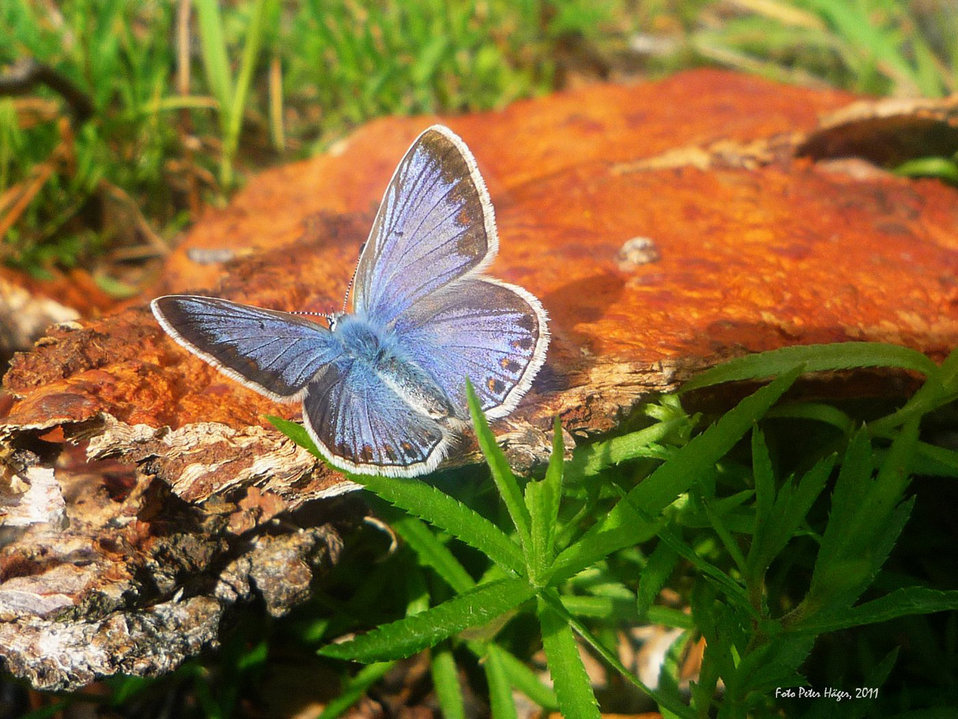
Blue wing butterfly

Cranberry blue, plebejus optilete.